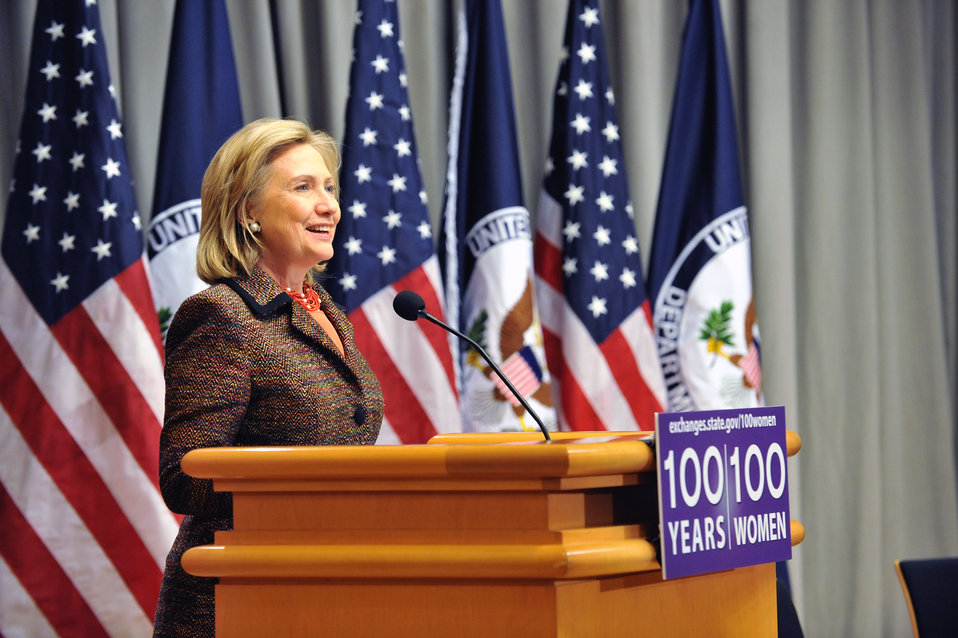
Secretary Clinton Launches the “100 Women Initiative: Empowering Women and Girls through International Exchanges'

U.S. Secretary of State Hillary Rodham Clinton launches the “100 Women Initiative: Empowering Women and Girls through International Exchanges' in the Marshall Conference Center at the U.S. Department of State in Washington, D.C., on March 7, 2011.